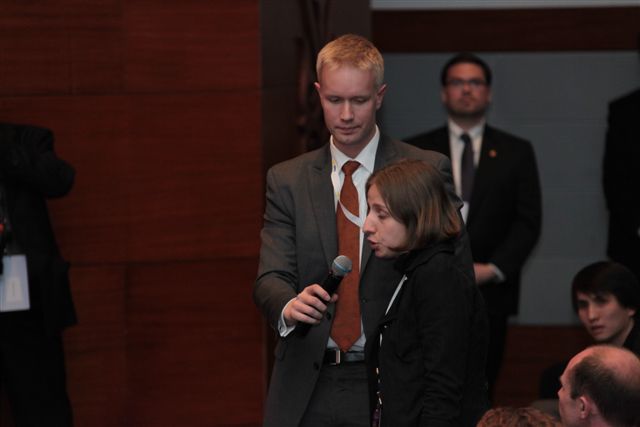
A Student Asks Secretary Clinton a Question

A student asks U.S. Secretary of State Hillary Rodham Clinton a question at the Town Hall on Empowering Civil Society for Central Asia's Future at Eurasian University in Astana, Kazakhstan, on November 30, 2010.